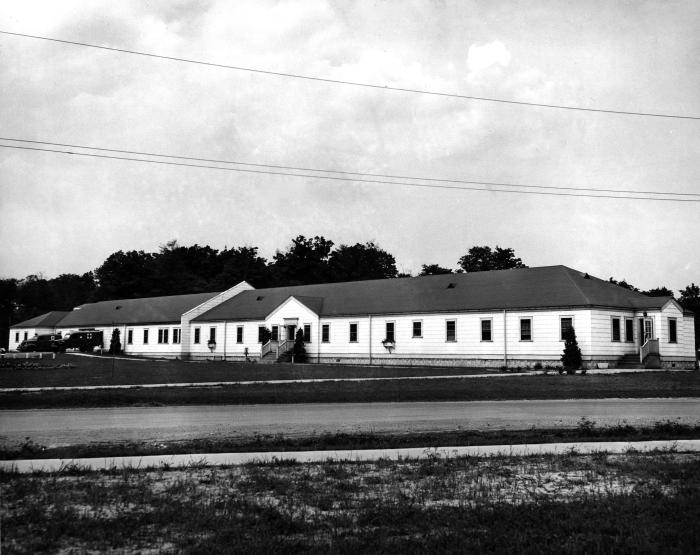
Provided by the Center for Disease Control's (CDC), National Institute for Occupational Safety and Health (NIOSH), this historic 1943 image depicted the exterior of an Ohio TNT military ordnance manufacturing plant. Workers inside were exposed to the toxic substance trinitrotoluene when it became airborne through its volatility, or through the inhalation of contaminated dust particulates, as well as when the substance came into accidental contact with their skin. A poisonous chemical, TNT will irritate the skin upon contact, and actually will change the skin's color to a bright yellow-orange. Prolonged exposure leads to liver damage, anemia, enlargement of the spleen, and a compromised immune system, to name a few of its negative effects. Trinitrotoluene is also a known carcinogen.